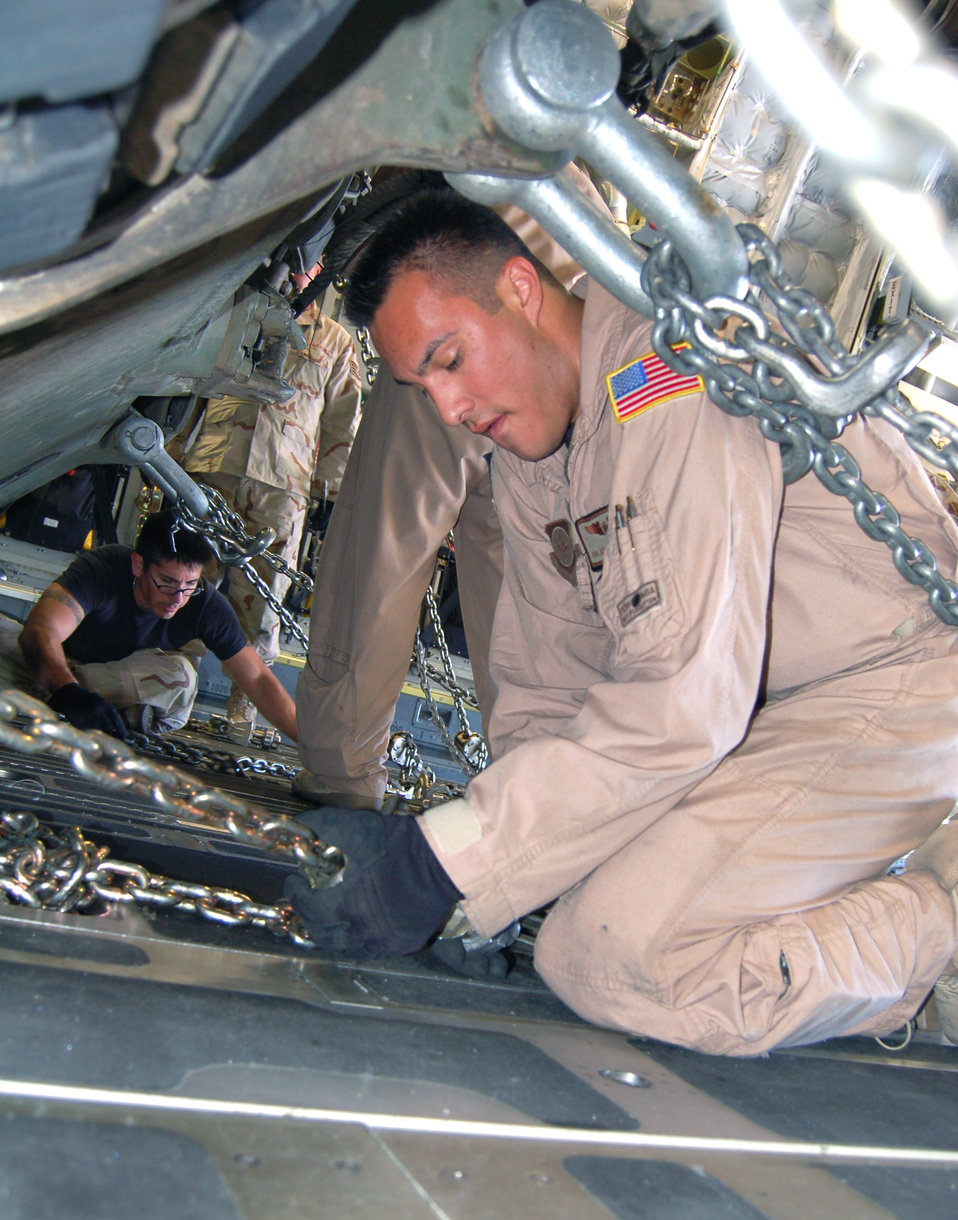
'Spirit of McChord' gives Canadians lift

Senior Airman Jeramia Valentine tightens a chain to secure a Canadian Leopard tank Oct. 7 for transportation from Manas Air Base, Kyrgyzstan, to Kandahar Air Base, Afghanistan. Airman Valentine is a loadmaster deployed from the 10th Airlift Squadron at McChord Air Force Base, Wash.